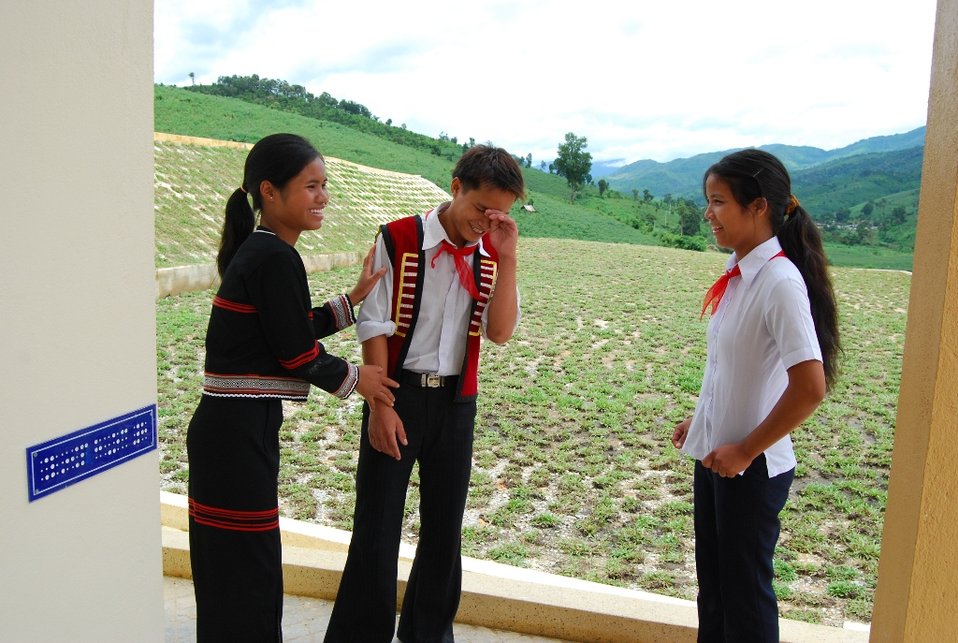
USAID supports education for ethnic minorities in rural Vietnam.

Middle school students enjoy learning at the new Kon Ray School for ethnic minorities and persons with disabilities in Vietnam's mountanous Kon Tum Province.